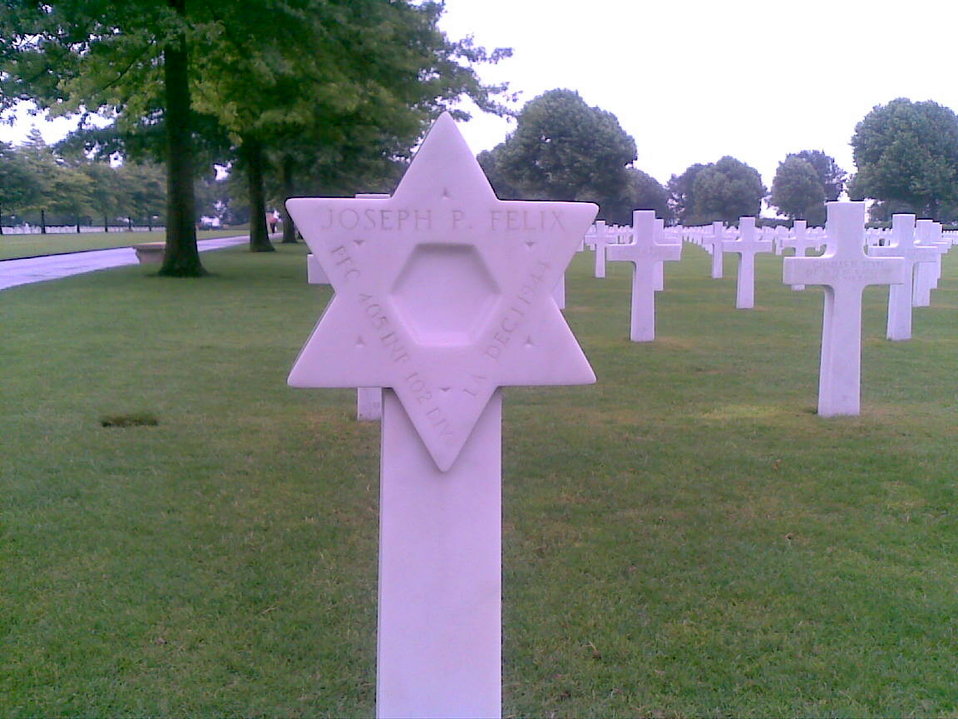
Deutsch: Netherlands American Cemetery, Grabstätte mit Davidstern